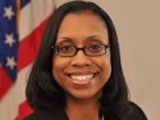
Nadine Gracia